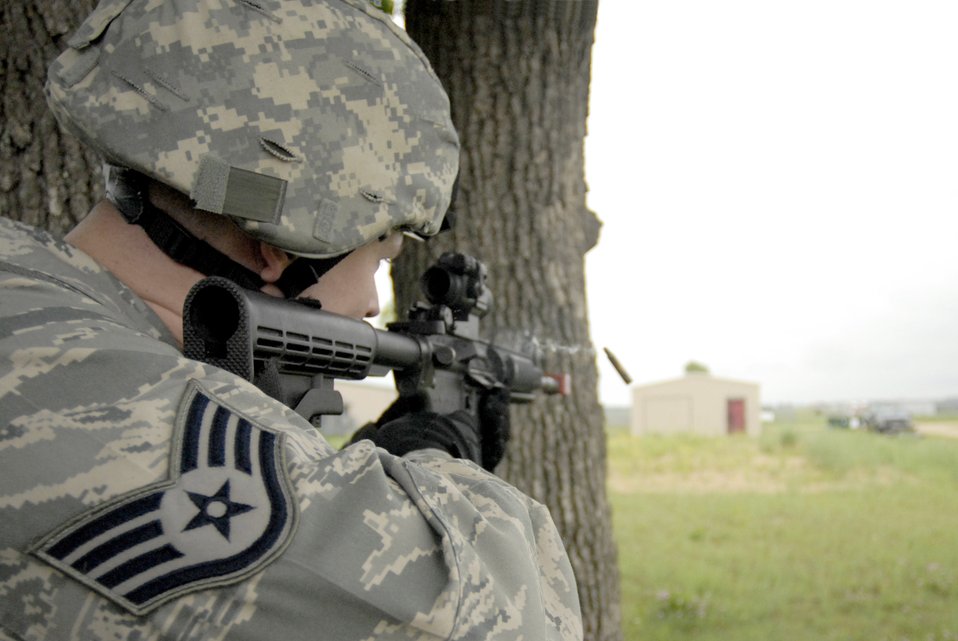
Security forces land navigation exercise

Staff Sgt. Christian Bennett fires on insurgents during a training scenario June 14, 2010, at Volk Field Combat Readiness Training Center, Wis. Sergeant Bennett is the fire team leader with the 115th Security Forces Squadron.